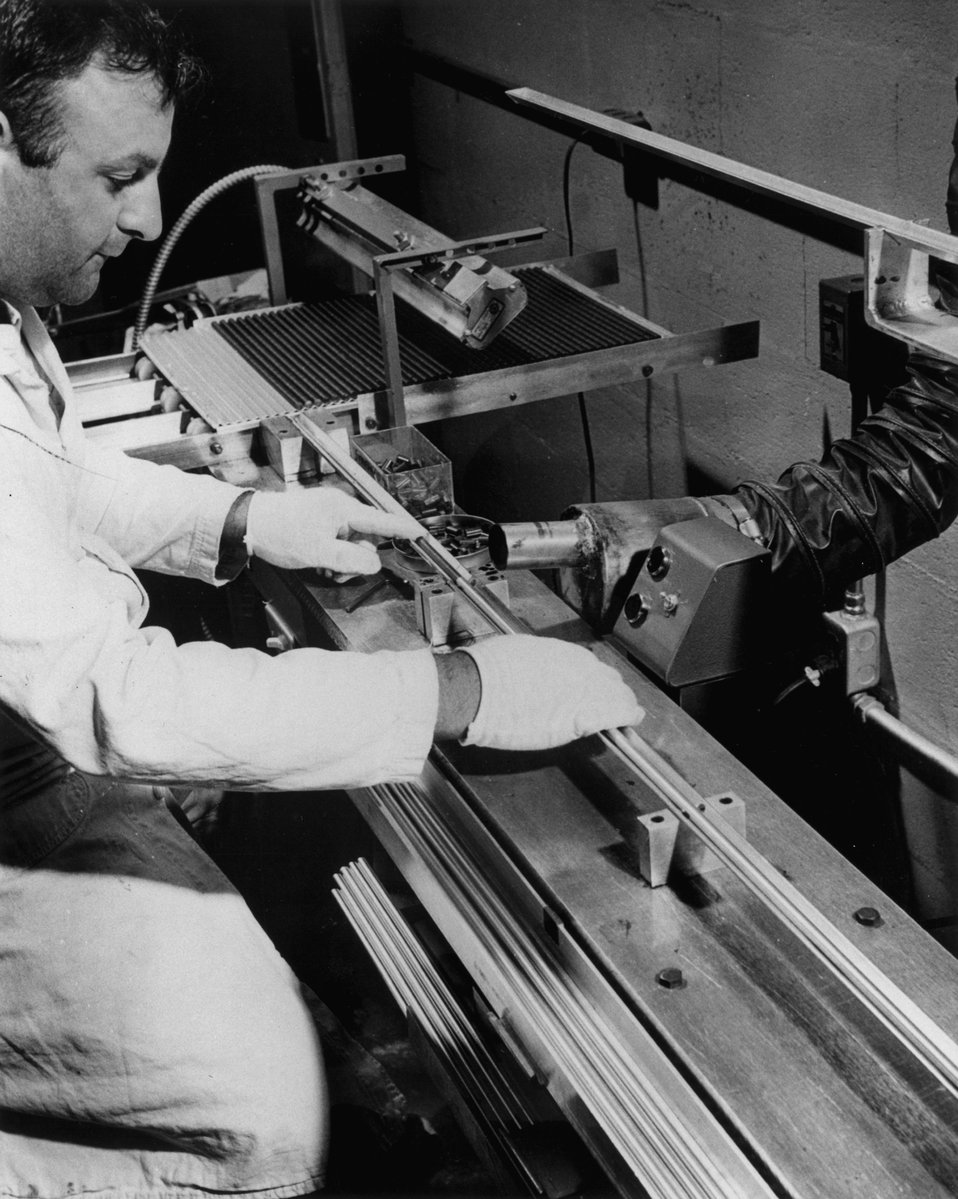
Finished fuel pellets are loaded into cladding tubes. c. 1964